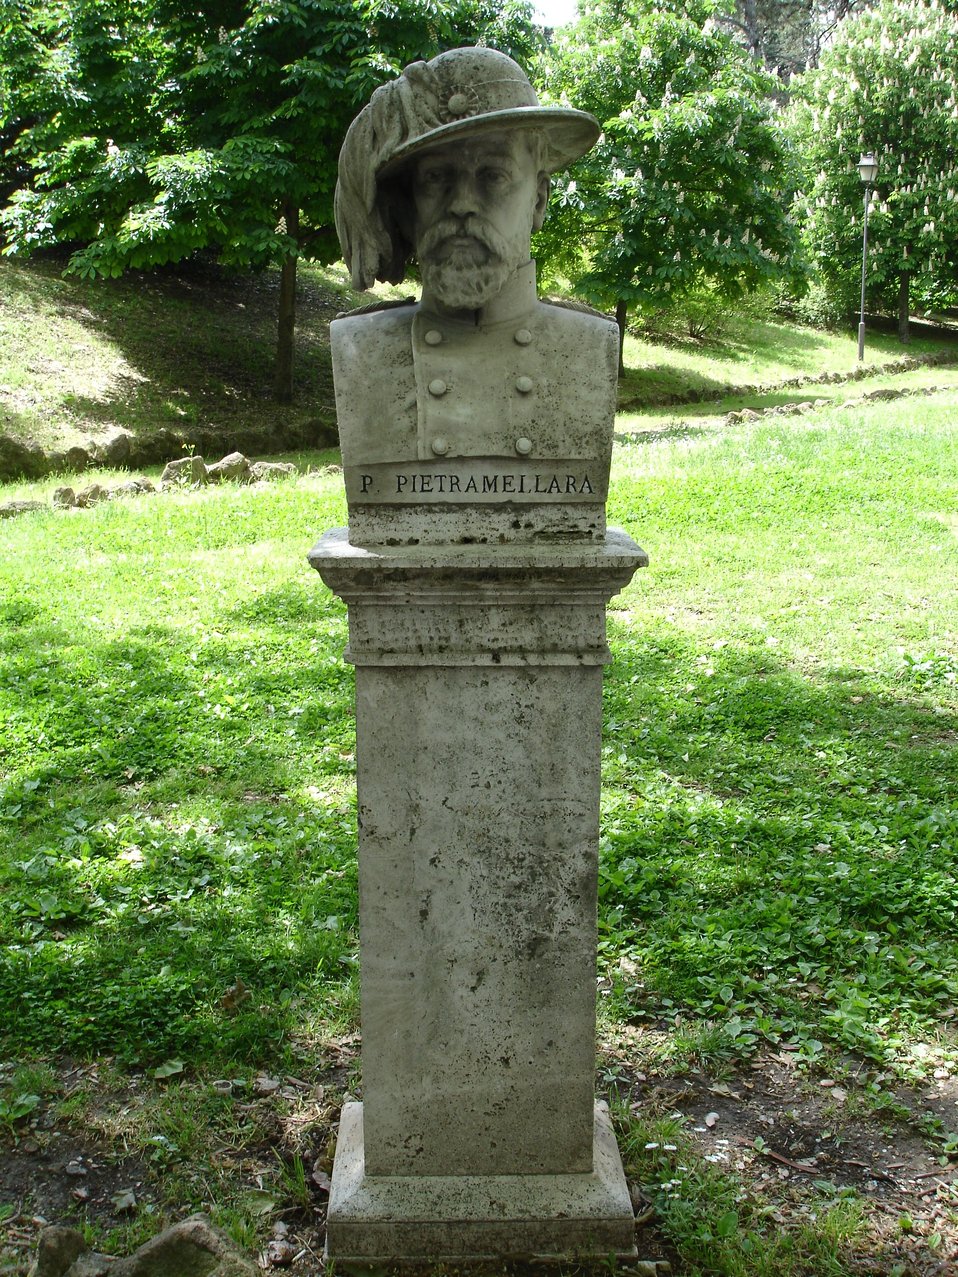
Italiano: Busto, del 1886, di Pietro Pietramellara (Bologna 1804 - Roma 1849) sul Gianicolo, a Roma. Marchese di orientamento liberale, Pietramellara difese Vicenza nel 1848 e la Seconda Repubblica Romana nel 1849. Foto scattata da F. Fullone. Original uploader was Fullo88 at it.wikipedia.